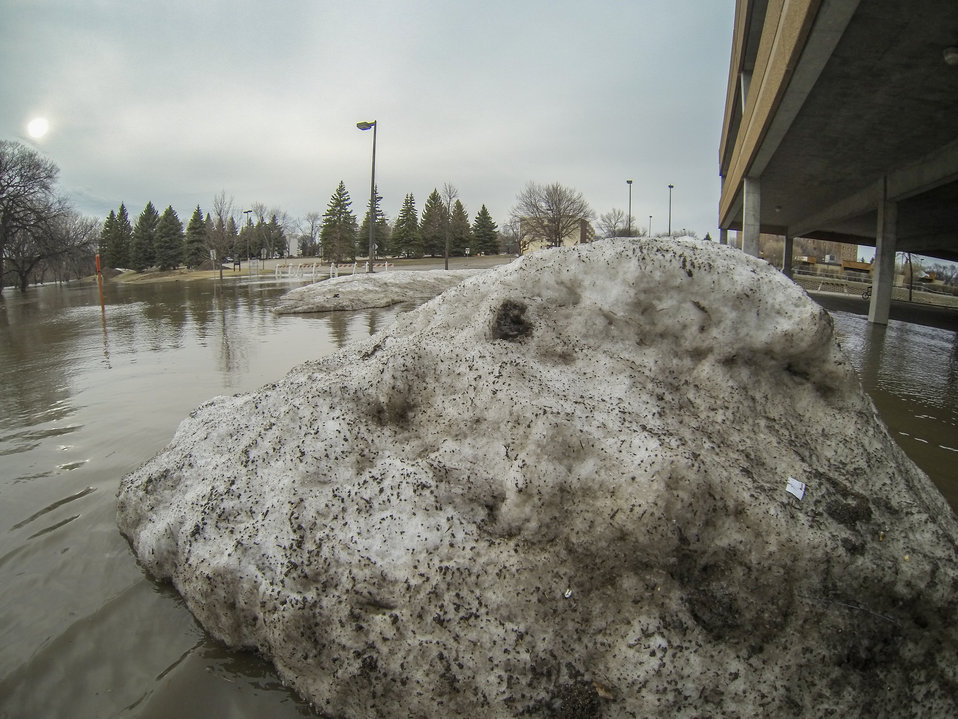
Snow near Moorhead Center Mall, at Center Mall Ave. and 3rd St. N., remains ready to melt, but a snowstorm to the southeast slows the melting here and in surrounding farmsteads in and around Moorhead, MN, on Monday, April 29, 2013. To learn about the Red River Basin Initiative, see www.mn.nrcs.usda.gov/news/features13/RRBI.html.